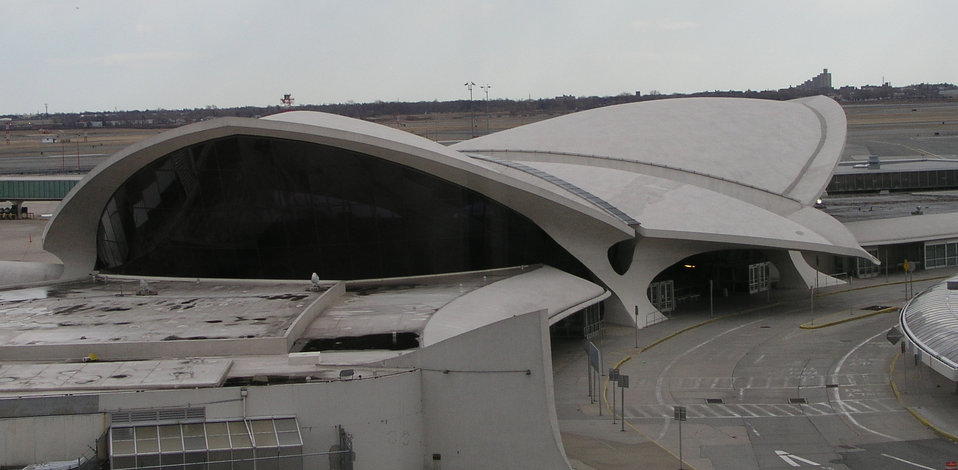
TWA Flight Center in 2004 — by Earo Saarinen (1962). It opened in 1962 as a standalone terminal for TWA—Trans World Airlines, and in 2008 was connected to the new JFK Terminal 5 ( Jetblue Terminal). Photographed by Marc N. Weissman (2004)